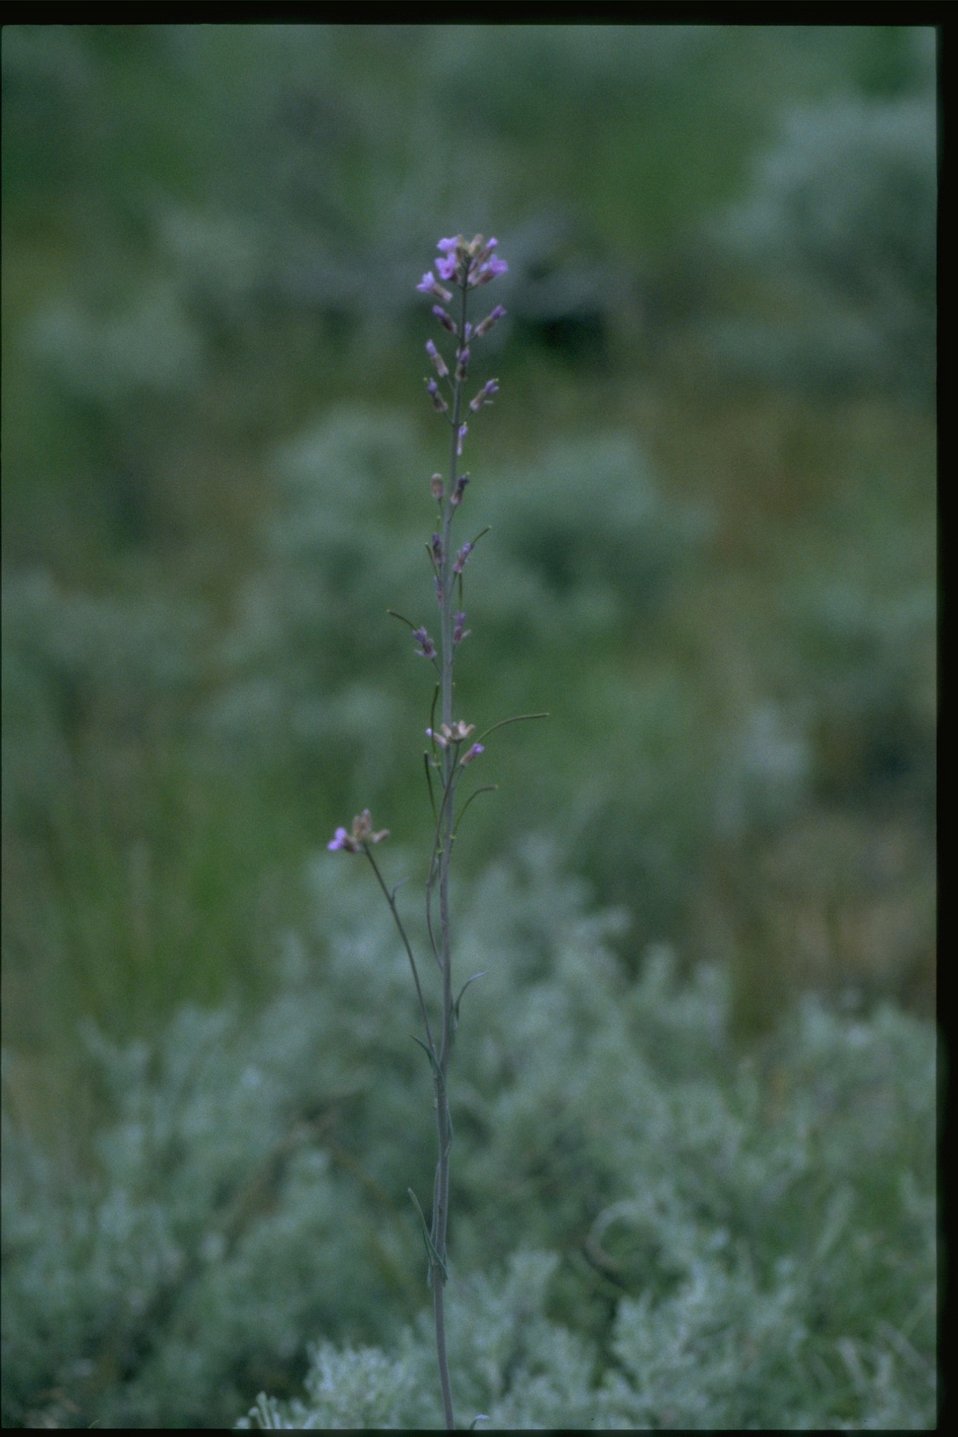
Medium shot of Penstemon wildflower habitat.